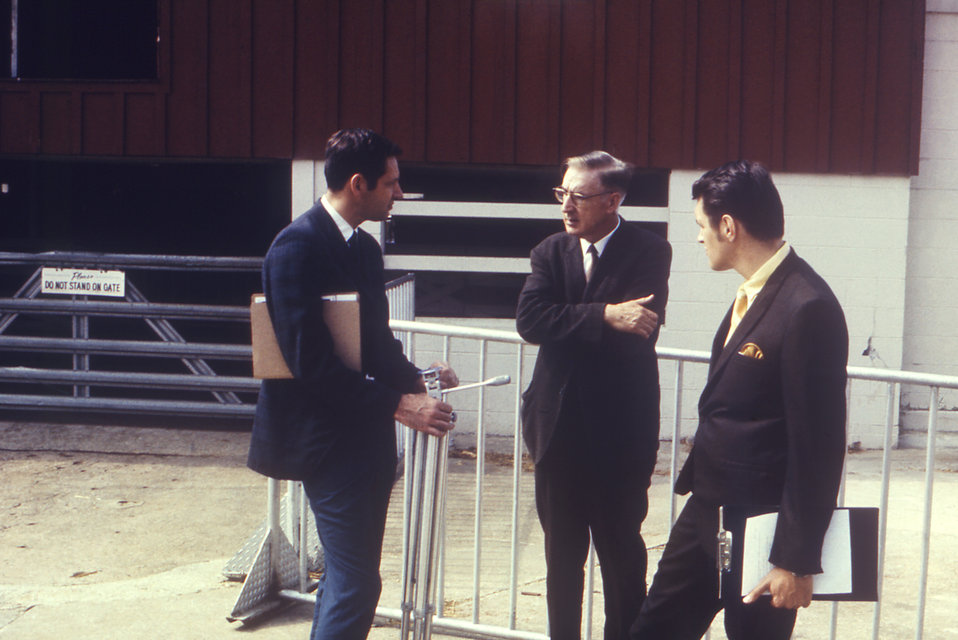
In this 1970 photograph, two CDC sanitarians Frank Bran (Lt), and an unidentified official (Rt), were meeting with a dairy administrator during an inspection of a milk-production facility.